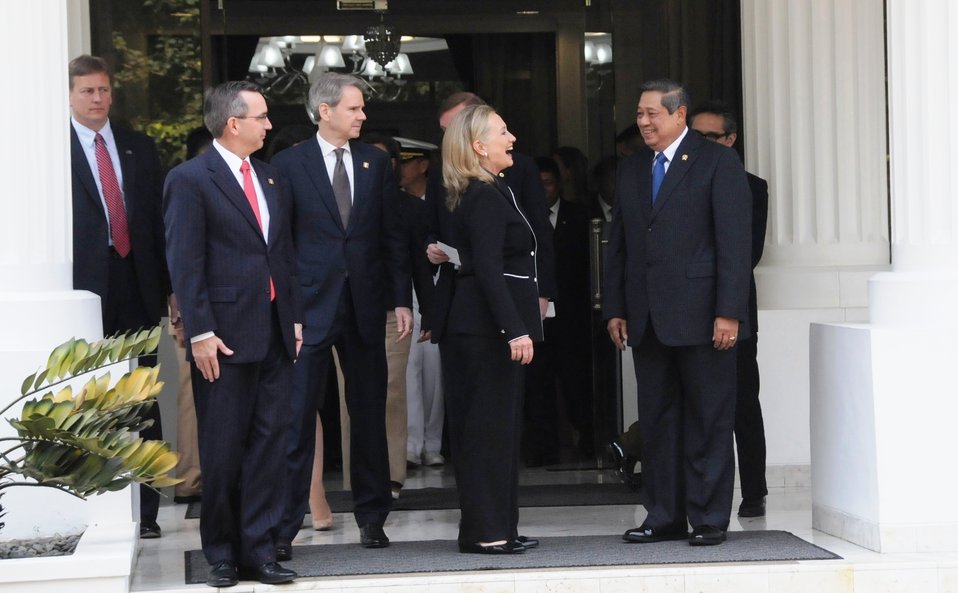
Secretary Clinton Departs the Presidential Palace

U.S. Secretary of State Hillary Rodham Clinton departs the Presidential Palace after her bilateral meeting with Indonesian President Susilo Bambang Yudhoyono in Jakarta, Indonesia, September 4, 2012.